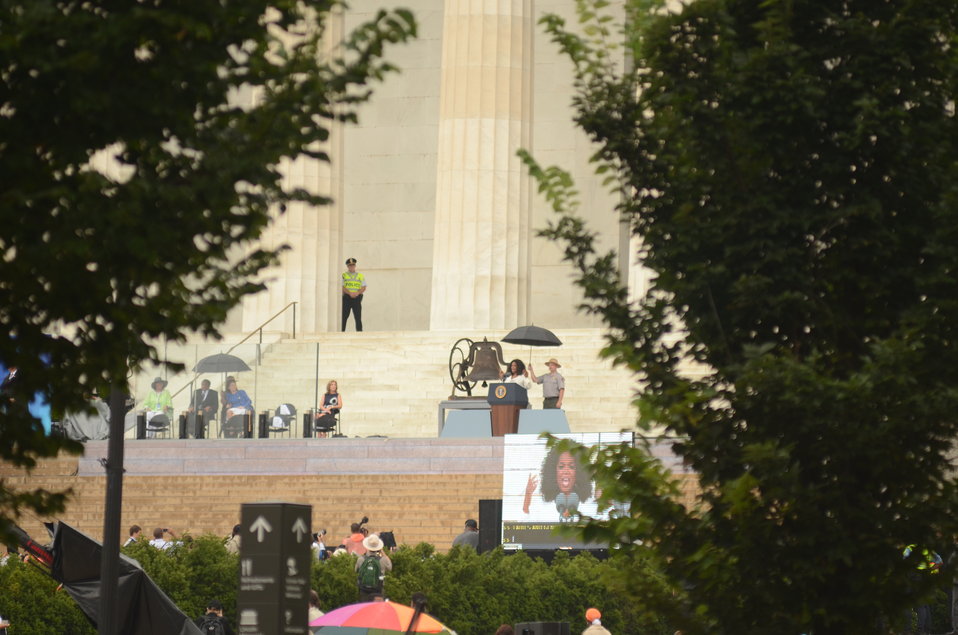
Oprah speaks to marchers at the Lincoln Memorial for the March on Washington, D.C., on Wed., Aug. 28, 2013.